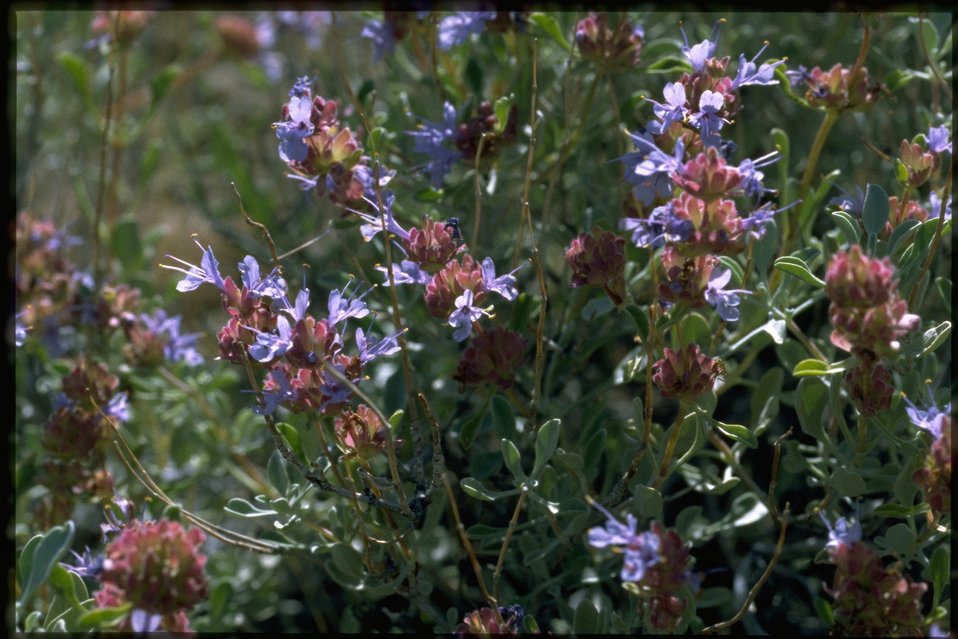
Medium shot of Salvia dorrii var gracilior.